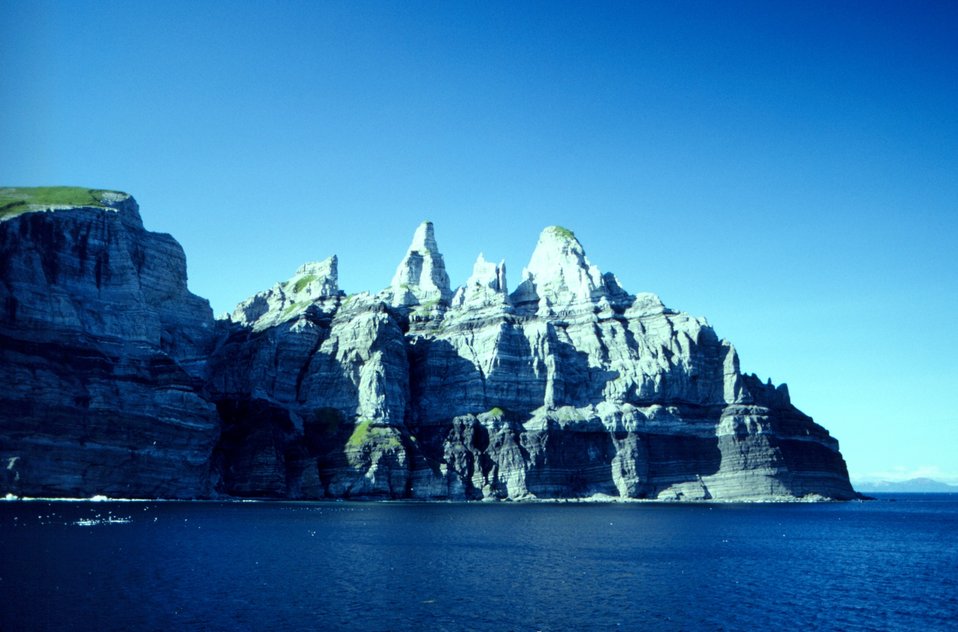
Castle Cape.